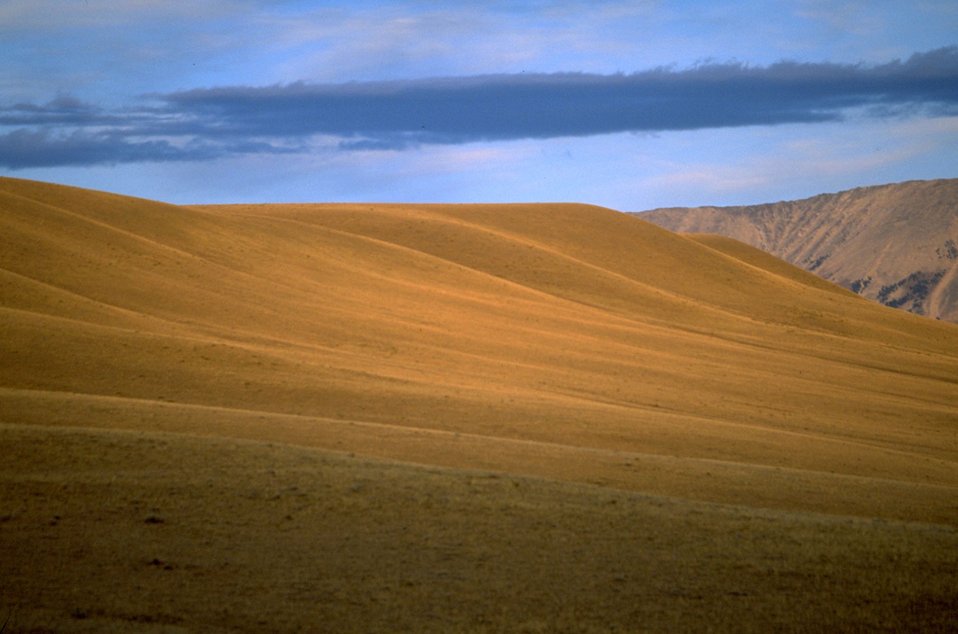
Golden grassy hillside